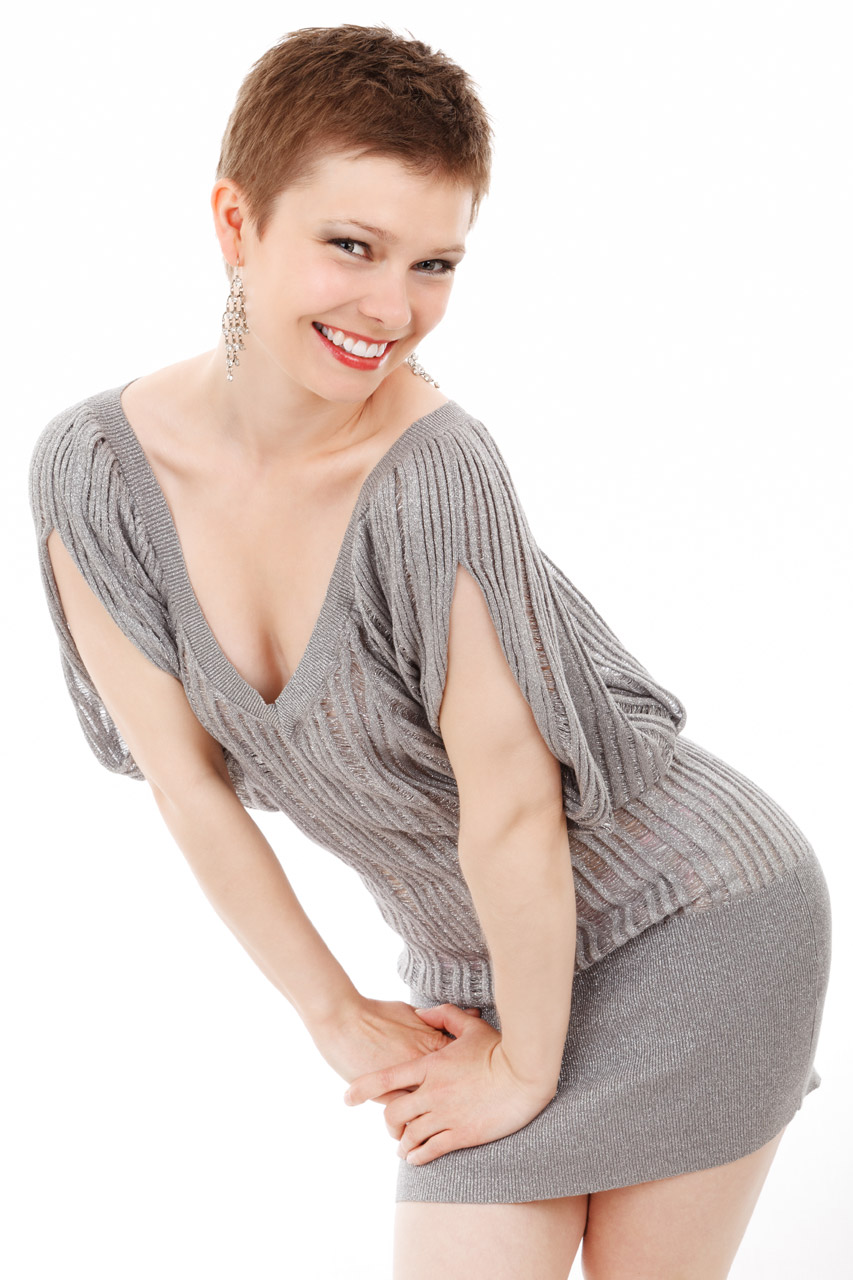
Sexy model

Young sexy smiling model isolated on white background - jana svojsova.